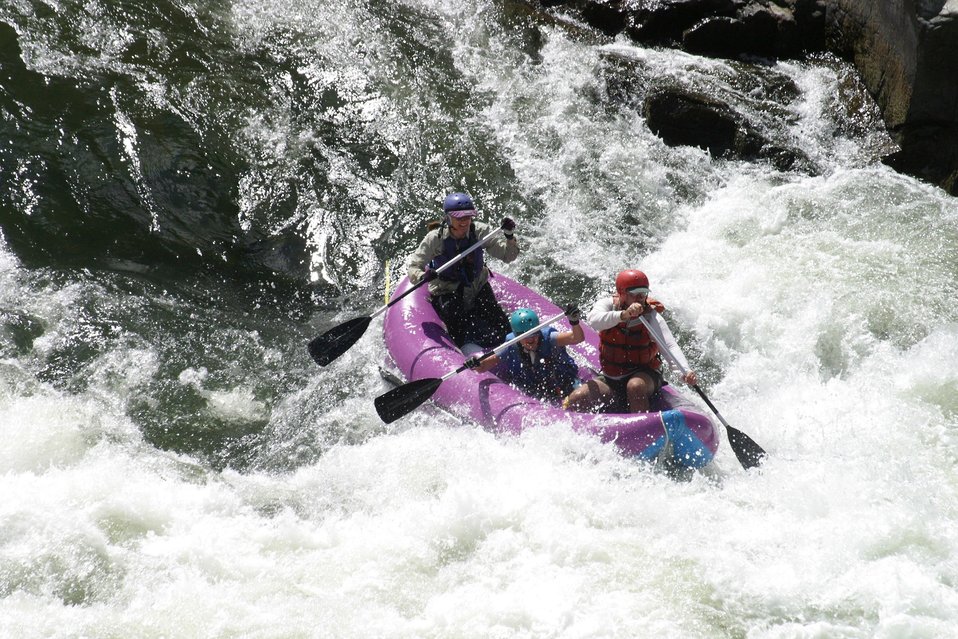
Boater at Grave Creek Falls